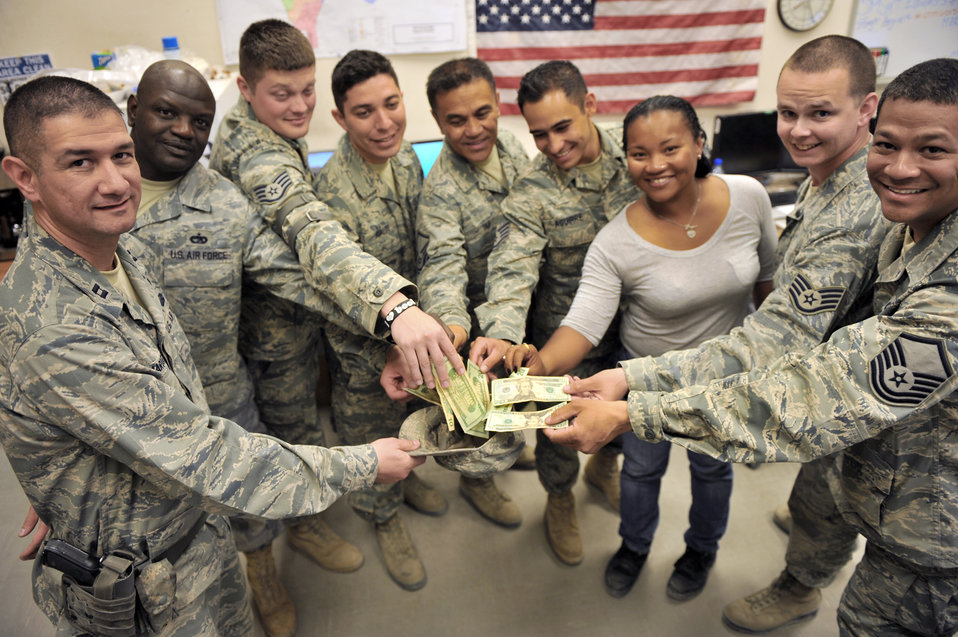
Deployed Airmen replace money stolen from girls in Georgia

Members from the 455th Expeditionary Aerial Port Squadron and 455th Expeditionary Logistics Readiness Squadron collected monetary donations to replace money stolen from three girls in Georgia.